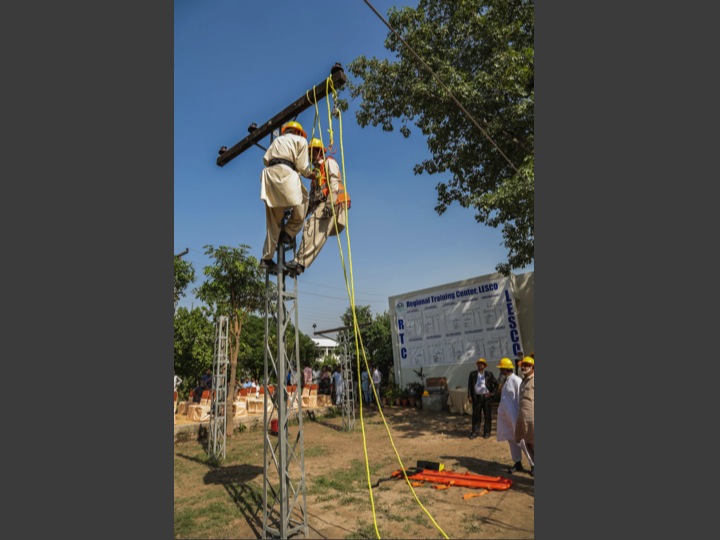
Linemen demonstrating the skills and techniques learnt from training2